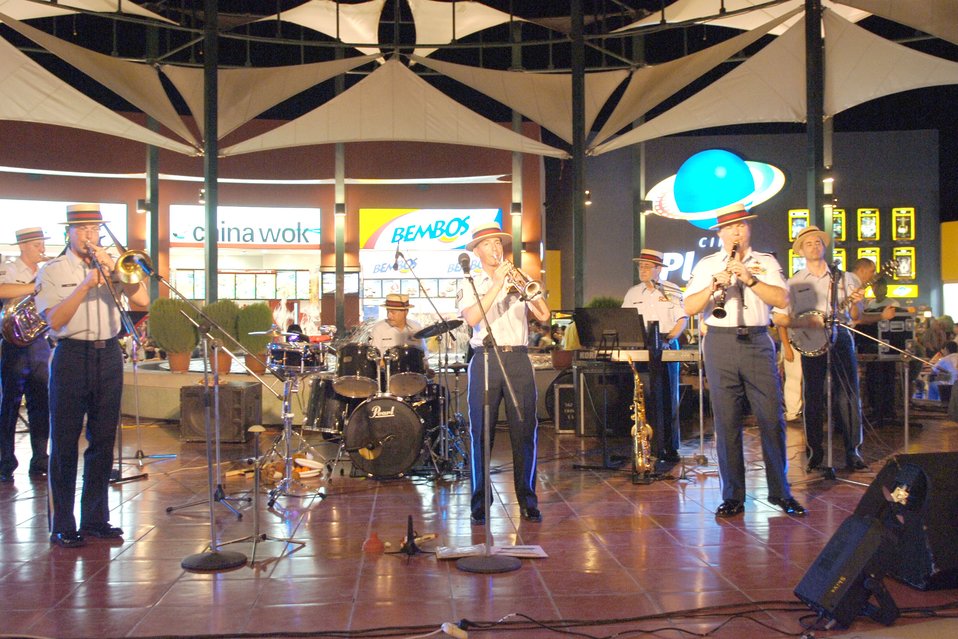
Air Force band builds relations in Peru

The Air National Guard Band of the Southwest performs for a Peruvian audience at a mall in Chiclayo, Peru. The band is in Peru to support Falcon and Condor 2007, a joint military exercise and air show that provides the U.S. military the opportunity to work together and build relationships with military and civilian leaders of Peru.